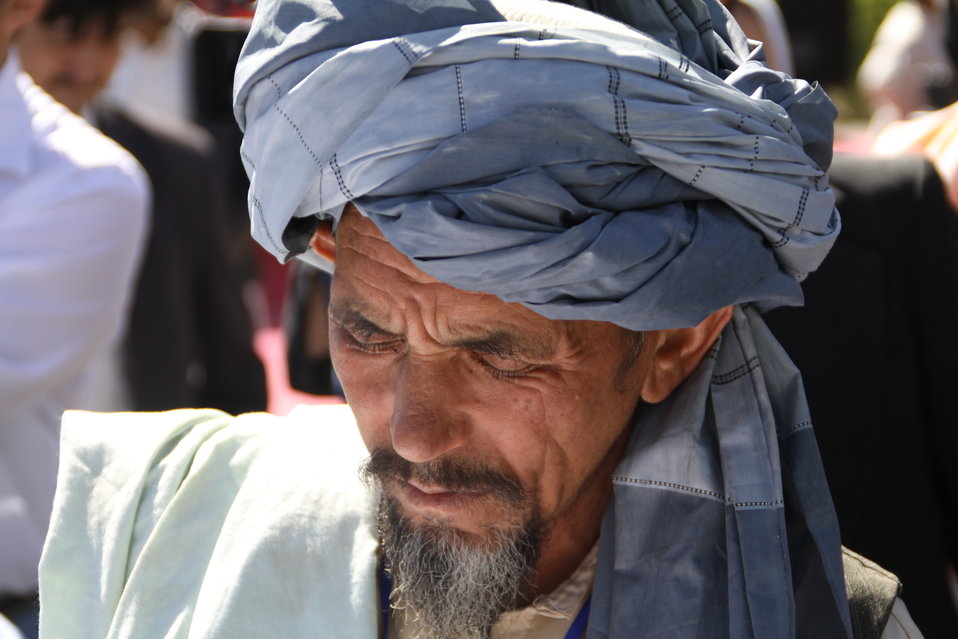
AVIPA Plus Wheat Seed Distribution 101005

US Ambassador Karl Eikenberry and USAID Acting Mission Director Kevin Brownawell joined the Minister of Agriculture, Irrigation and Livestock, H.E. Minister Mohammed Rahimi in signing a Memorandum of Understanding and distributing vouchers to area farmers for wheat and fertilizer.

US Ambassador Karl Eikenberry and USAID Acting Mission Director Kevin Brownawell joined the Minister of Agriculture, Irrigation and Livestock, H.E. Minister Mohammed Rahimi in signing a Memorandum of Understanding and distributing vouchers to area farmers for wheat and fertilizer.